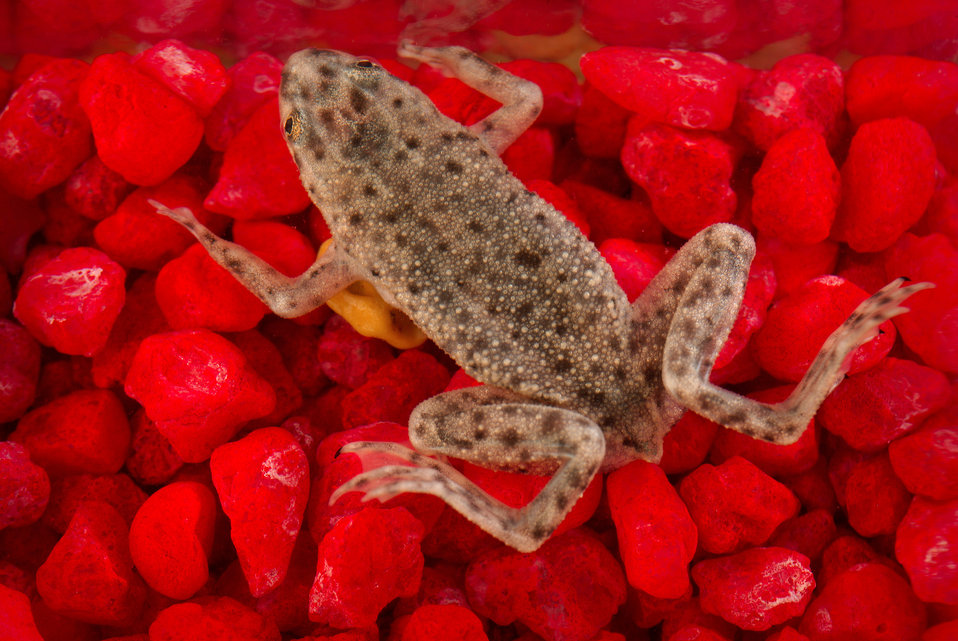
This photograph depicts an African dwarf frog, Hymenochirus boettgeri.